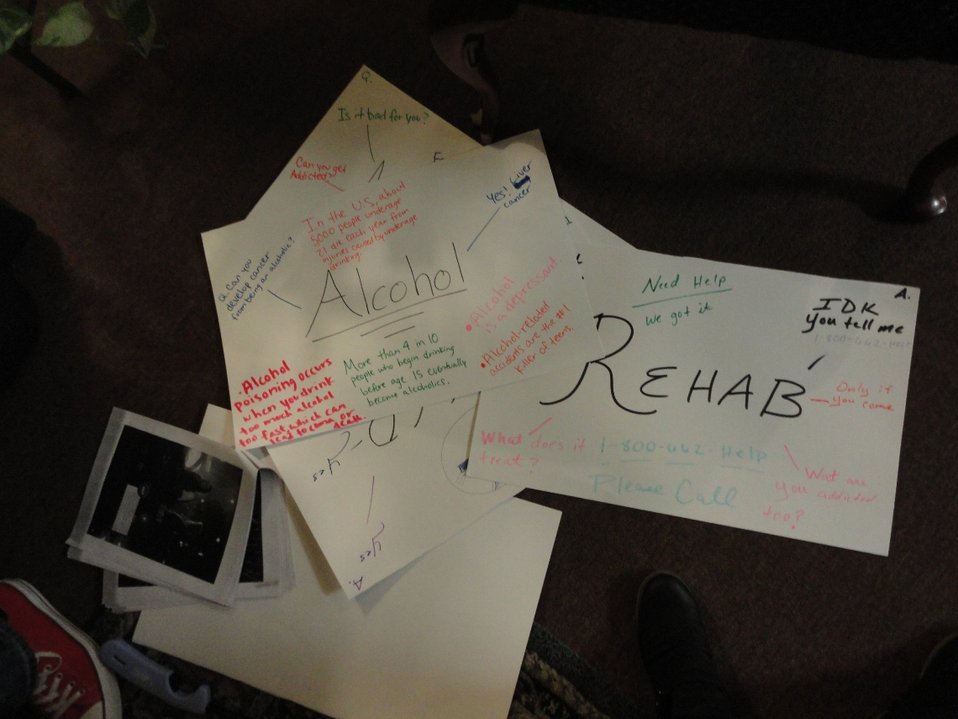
DREAM's, MS Student Advisory Board of Youth Highway Safety NDFW 2013

Mississippi High School Students participate in NDFW 2013 events.